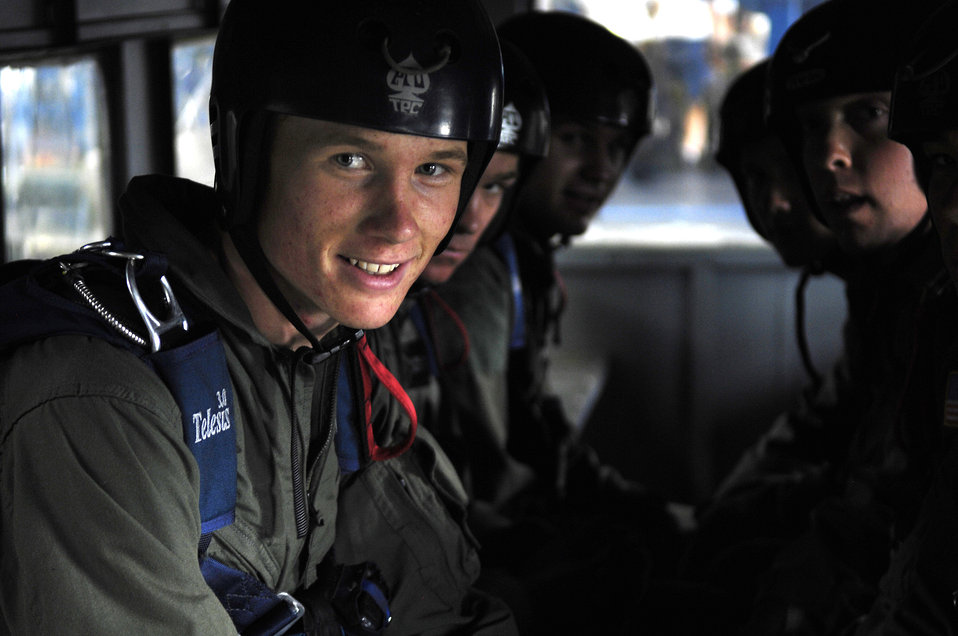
Earning those jump wings

U.S. Air Force Academy Cadet 3rd Class Elliot Noon and several other cadets sit in the Twin Otter aircraft July 7 awaiting take off. They are completing Airmanship 490, Basic Parachuting, an airmanship program where cadets earn their basic jump wings after successfully completing five free-fall jumps.